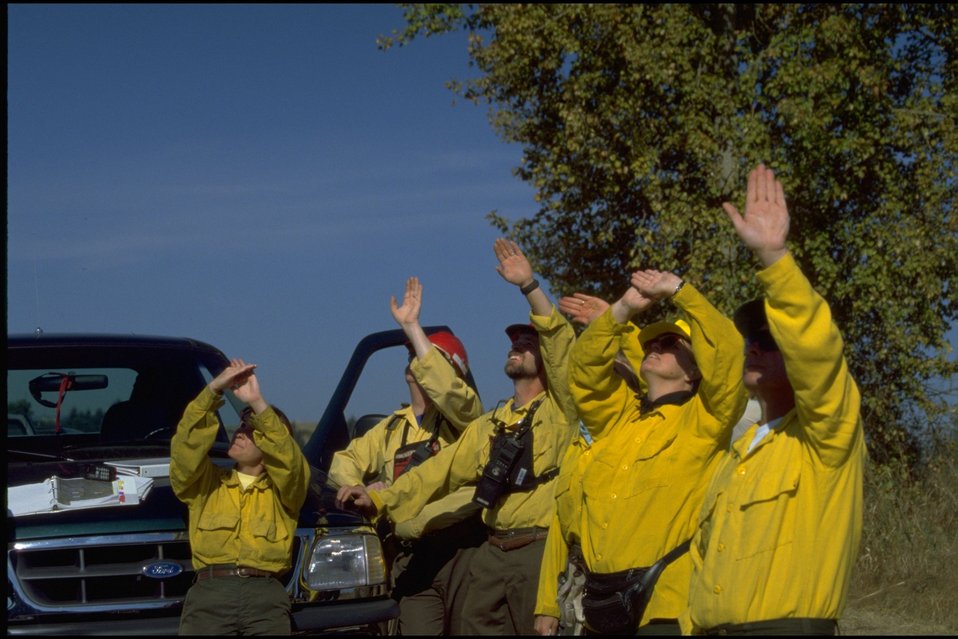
Weather baloon watching - Turtle-Swale Wetland Burn.